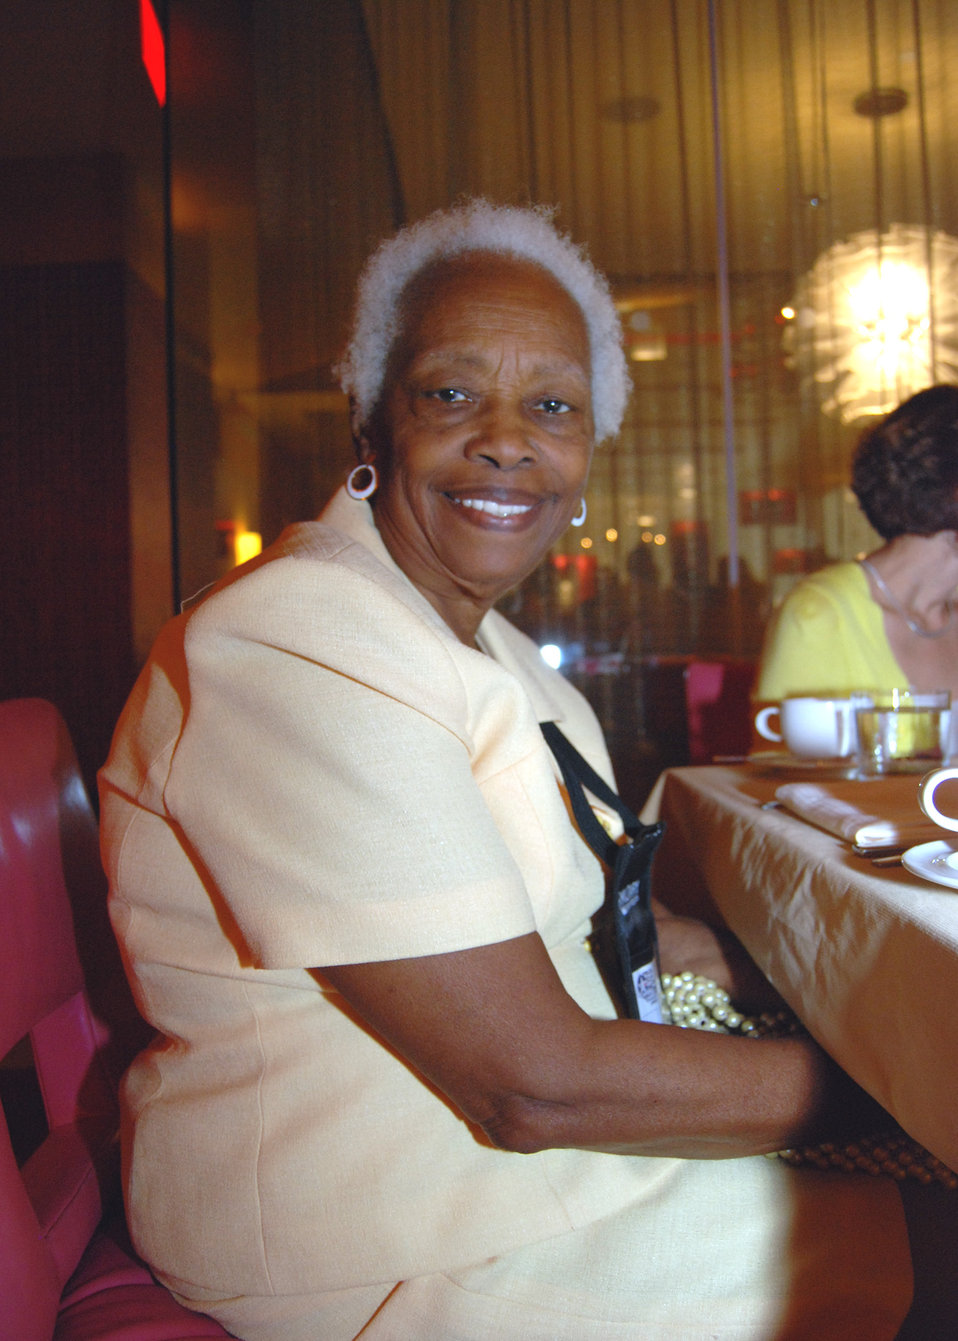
Nancy Leftenant-Colon: First African-American in Army Nurse Corps and former Tuskegee Airman.